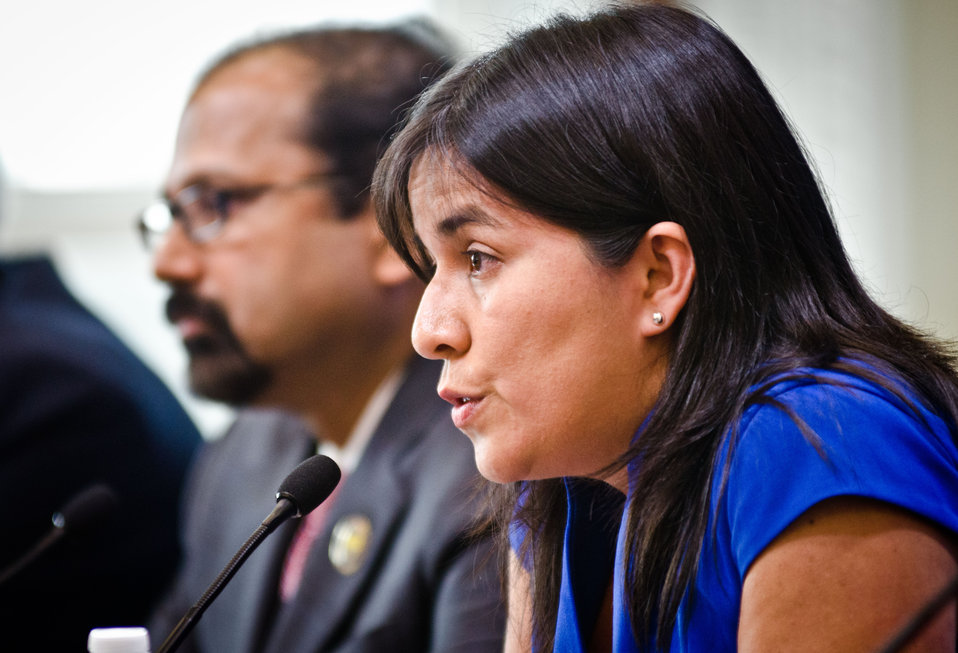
Catholic Medical Mission Board Project Director Dr. Claudia Llanten talked about food sources situations in Peru, during an event her work and ten other honorees recognized for her efforts to reduce hunger and increase food security in the U.S. and internationally at the White House Champions of Change Strengthening Food Security at Home and Abroad Event held at the White House on Thursday, September 6, 2012, in Washington, D.C..